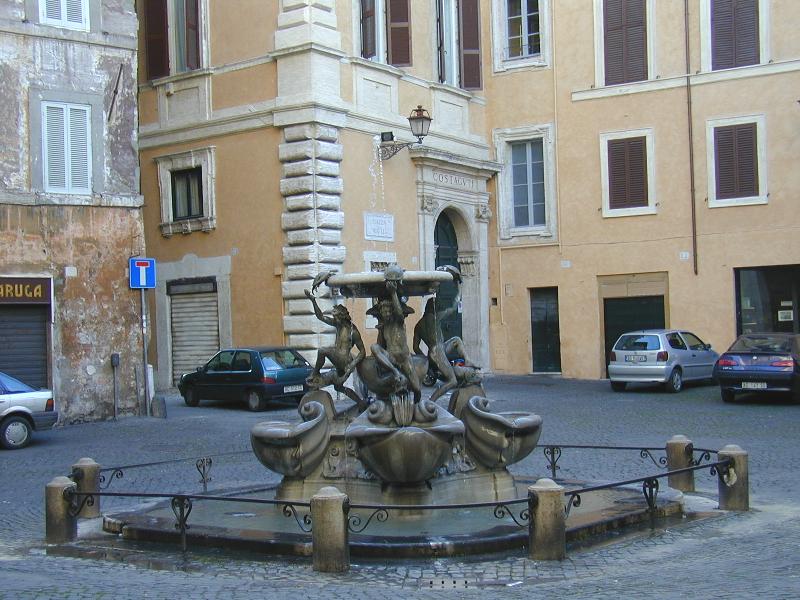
010101 11 piazza mattei le tartarughe